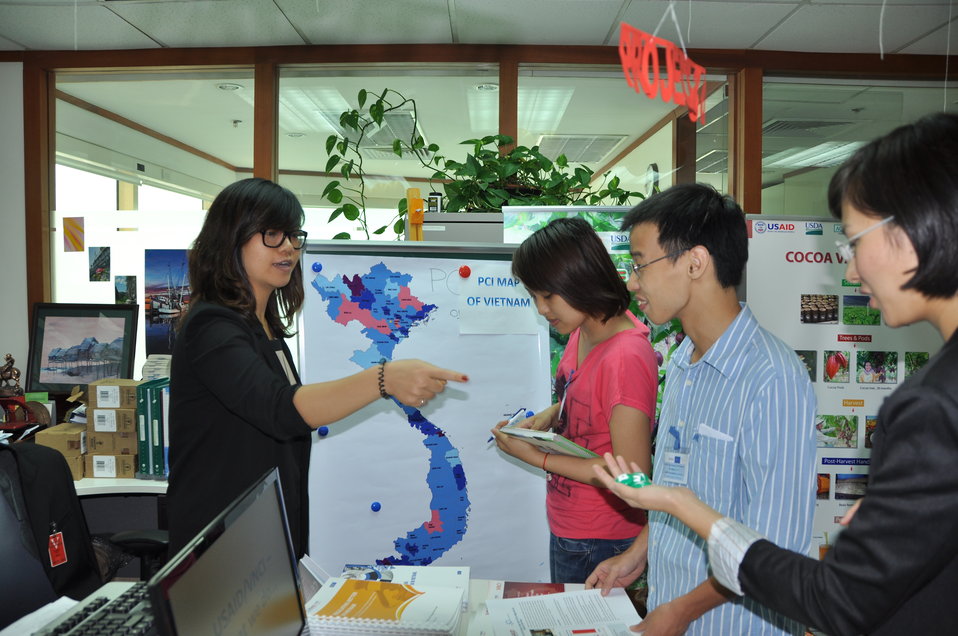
USAID Vietnam Open House 50th Anniversary, Hanoi